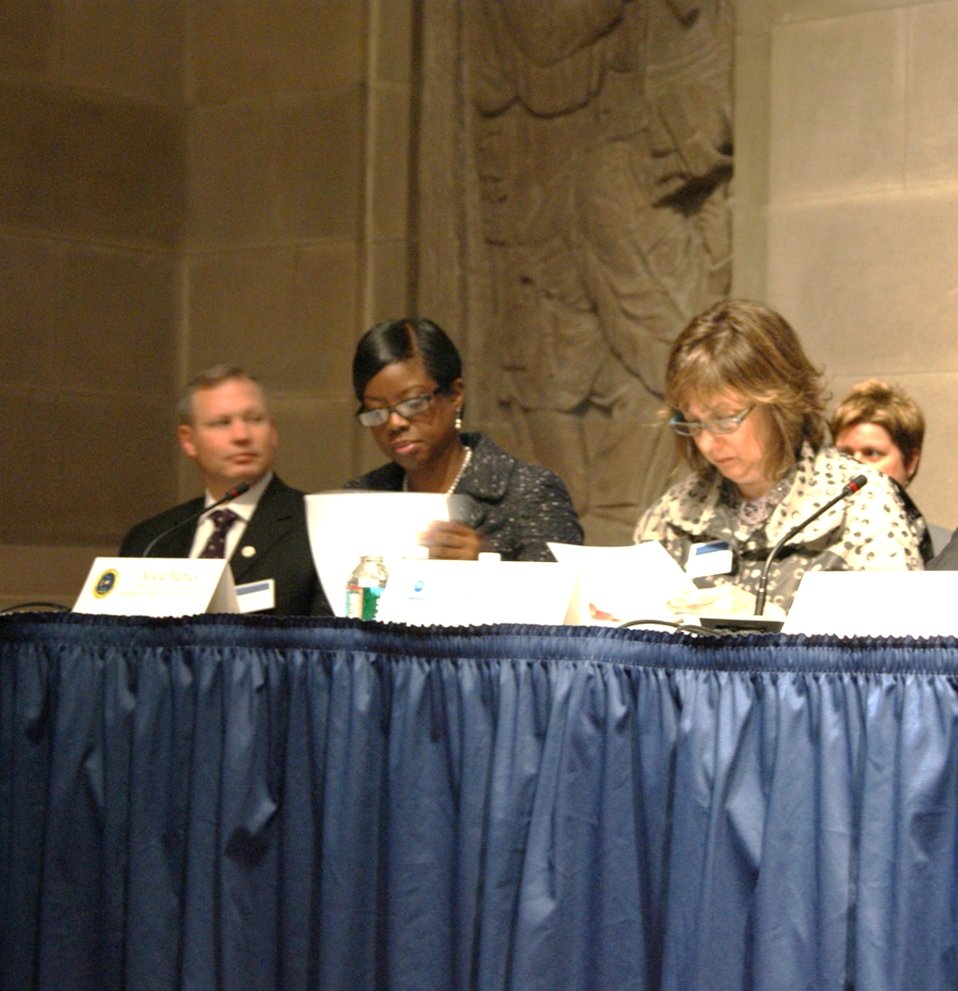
Coral Reef Task Force - Winter Meeting 2012